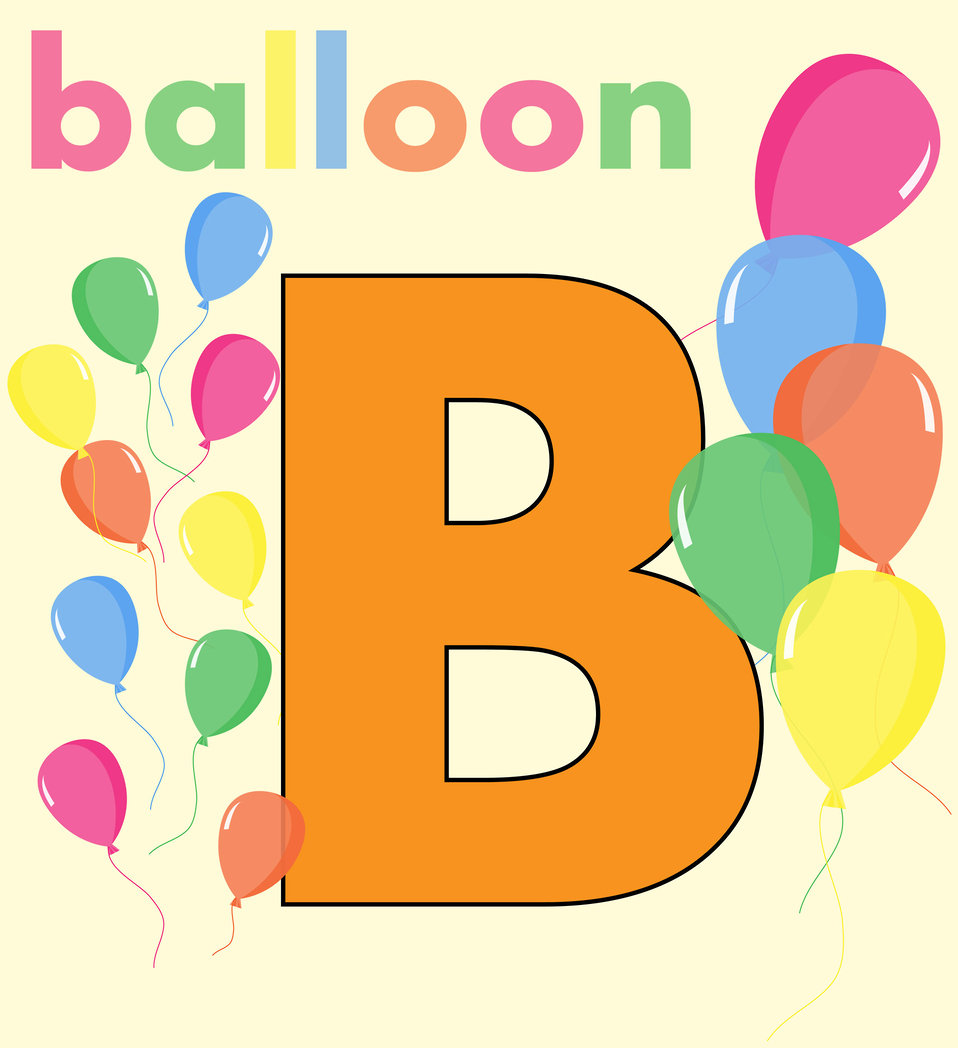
Alphabet letter b colorful balloons for kids.